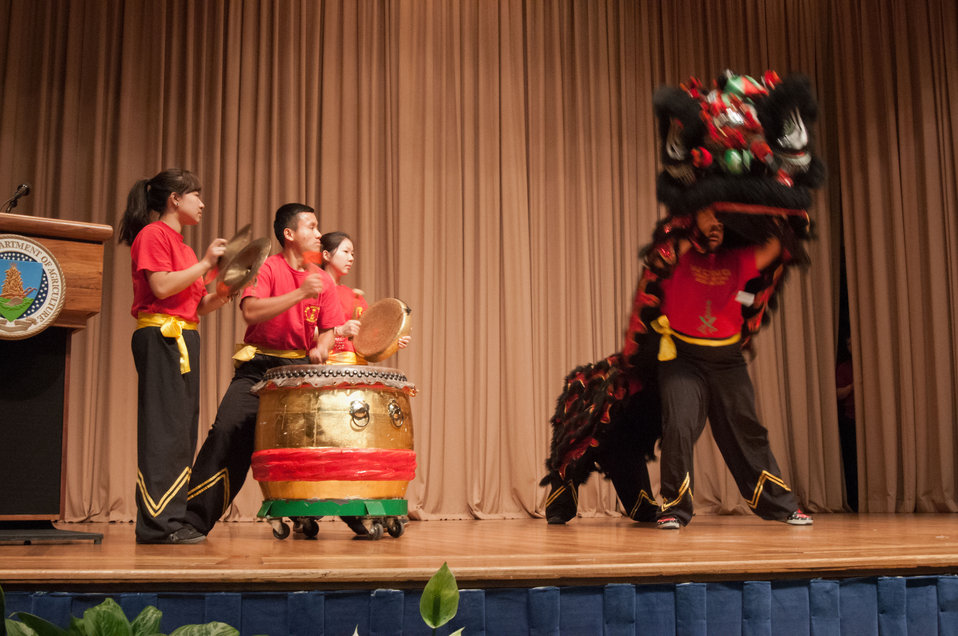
The Wong People Studio, The Ancient Chinese Dragon Dance Group performed the Dragon dance at the 2012 Asian Pacific American Heritage Observance “Striving for Excellence in Leadership, Diversity and Inclusion” at the U.S. Department of Agriculture in Washington, D.C. on Thursday, May 24, 2012. The Dragon dance is an ancient ritual based on Taoist Principles used to drive away evil spirits or bad energy (chi). The costume worn while performing this ritual is specifically designed for the purpose of driving away evil. The music for the Dragon Ritual is also an integral element of this energy directing ritual. A Dragon Ritual is successful when the Dragon, musicians and spectators synchronize their flow of internal energy (chi) to drive away the bad energy.